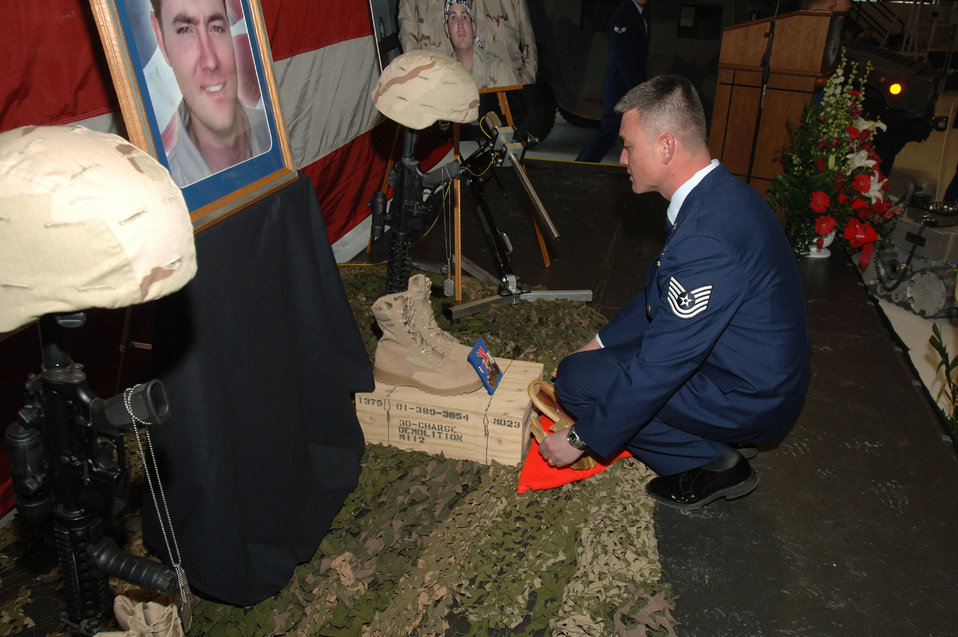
Memorial Service

Tech. Sgt. Robert Hood puts finishing touches Jan. 12 on a memorial display honoring three Hill Airmen who were killed in Iraq Jan. 7. Sergeant Hood is assigned to the 775th Civil Engineer Squadron Explosive Ordnance Disposal Flight at Hill Air Force Base, Utah.